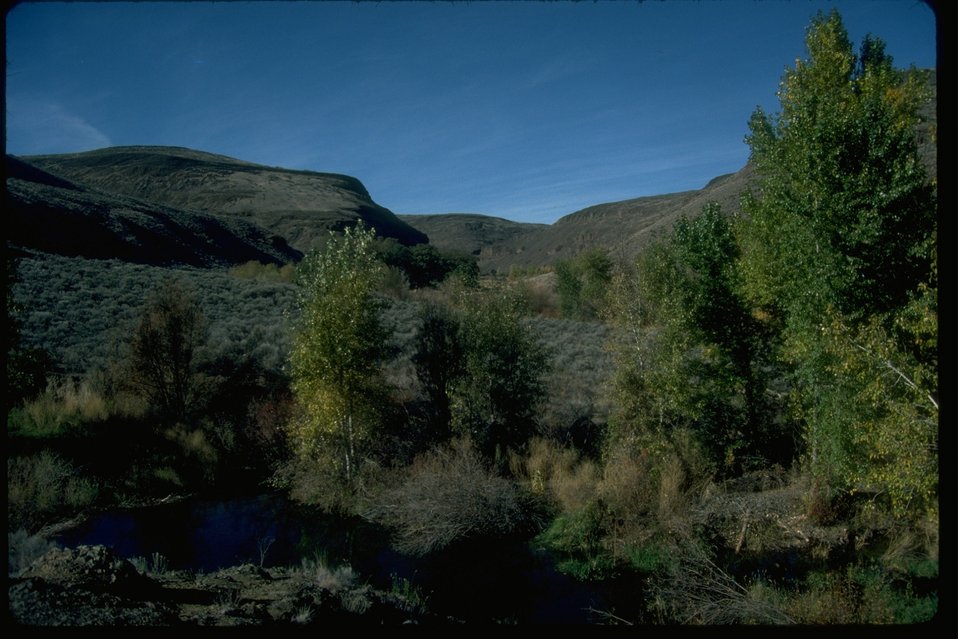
Douglas Creek Area in Douglas County, Washington